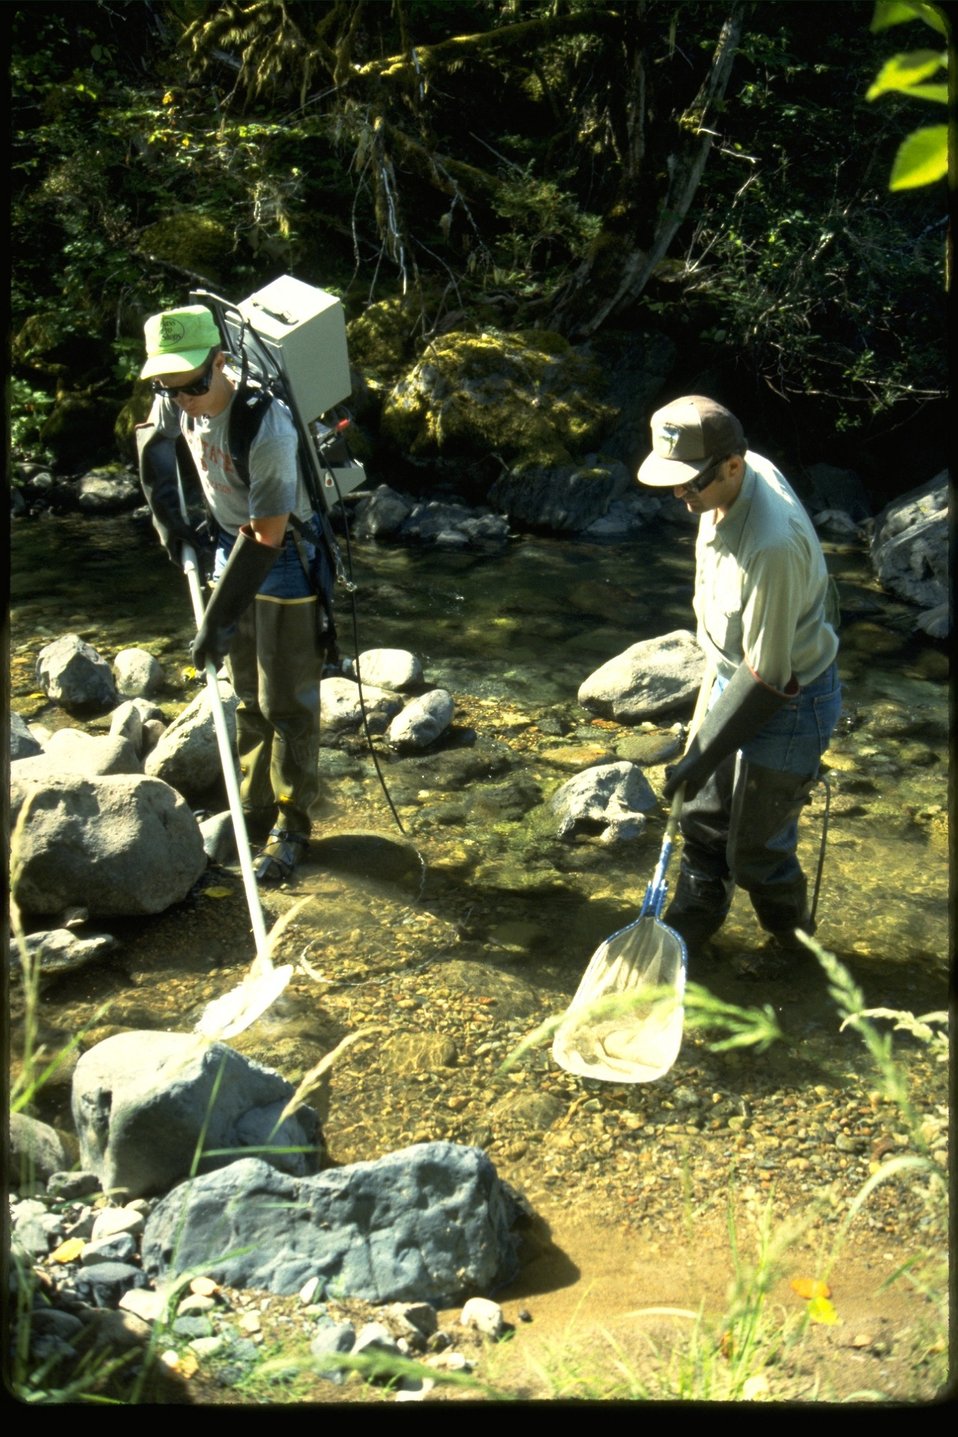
Elijah and Jerry using electro shocker for fish population study.